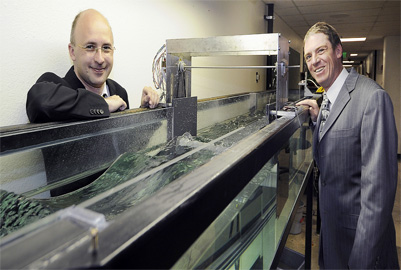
Aero lab harnesses wave energy in simulation research

Marcus Roemer (left) and Dr. Stefan Siegel stand near a water tank containing a 1:300 scale model of a wave energy converter they designed in the fall of 2008. Officials from the Department of Energy and the National Science Foundation have invested in a series of larger tests with a 1:10 scale model of the Academy's wave energy converter, which has harnessed upwards of 99 percent of energy in a wave in tests here.